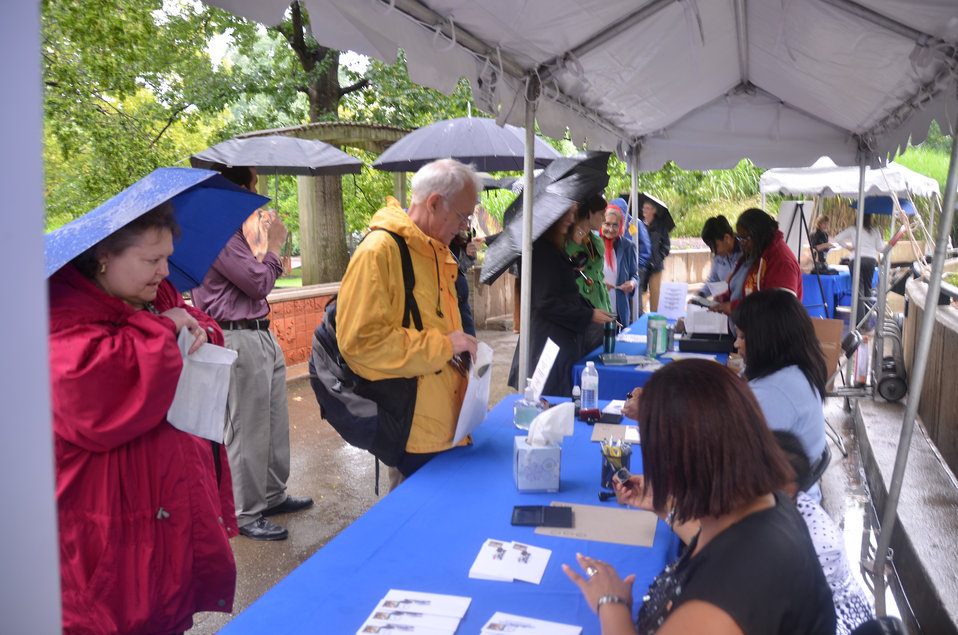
Save Vanishing Species Stamp First Day of Issue